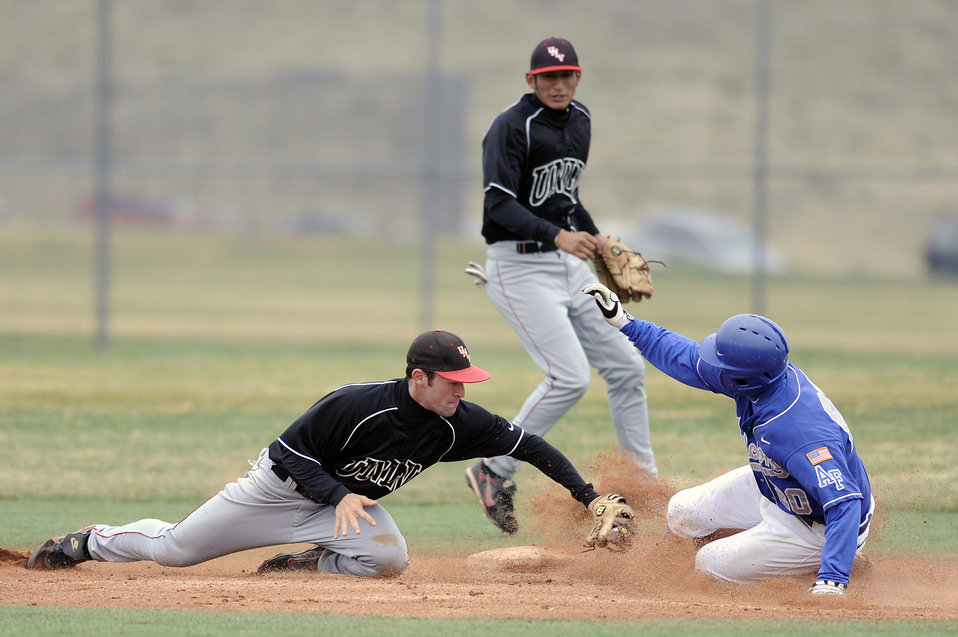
Baseball: Academy battles UNLV, falls 20-13

U.S. Air Force Academy sophomore second baseman Jon McMahon slides safely into second base during the 20-13 loss to the University of Nevada, Las Vegas at Falcon Field April 25 at the Academy in Colorado Springs, Colo. The loss dropped Air Force to 14-25 overall, with a Mountain West Conference record of 3-8.